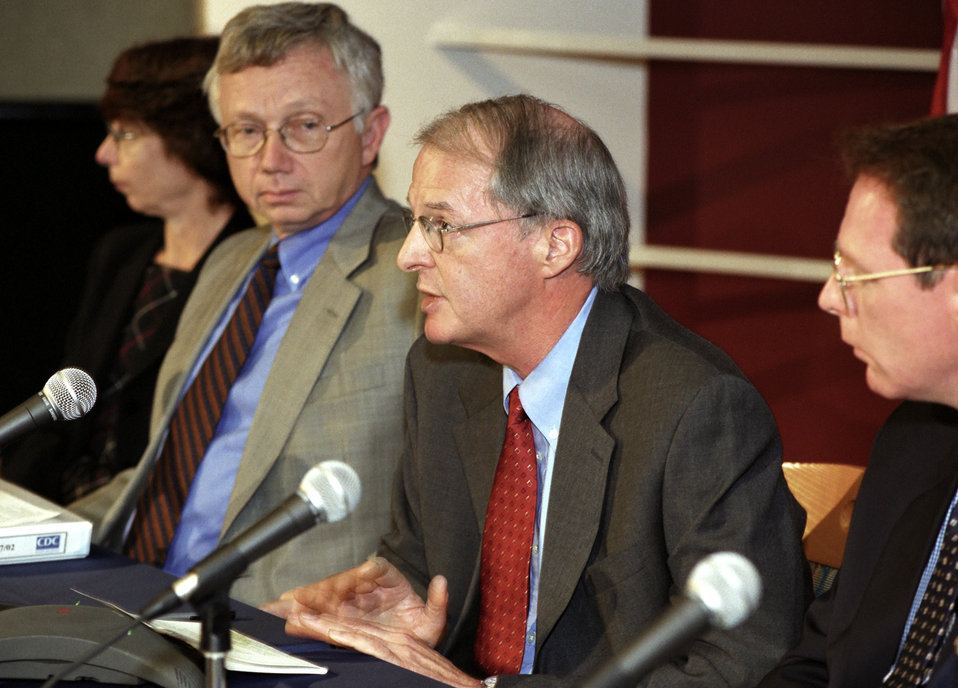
Centers for Disease Control and Prevention Bioterrorism Preparedness Press Briefing, August 27, 2002.